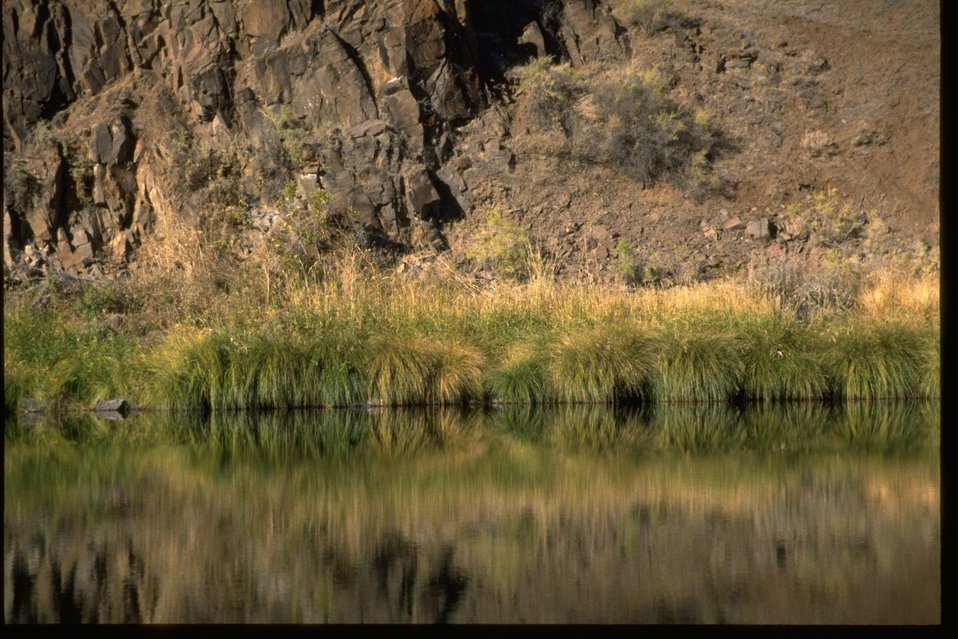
Riparian vegetation along the bank of the John Day River, near Bridge Creek.